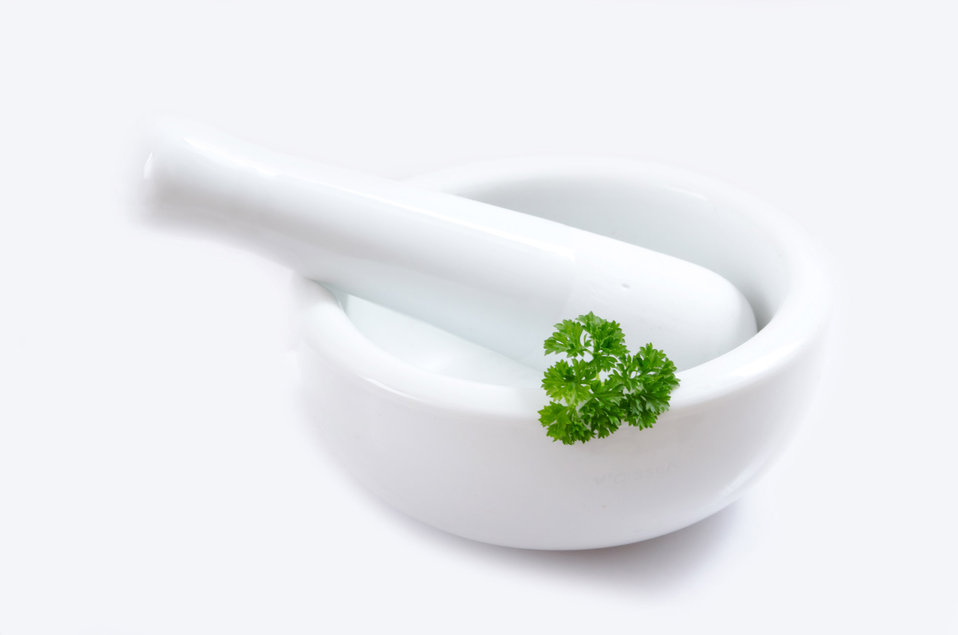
Fresh parsley on a white background.